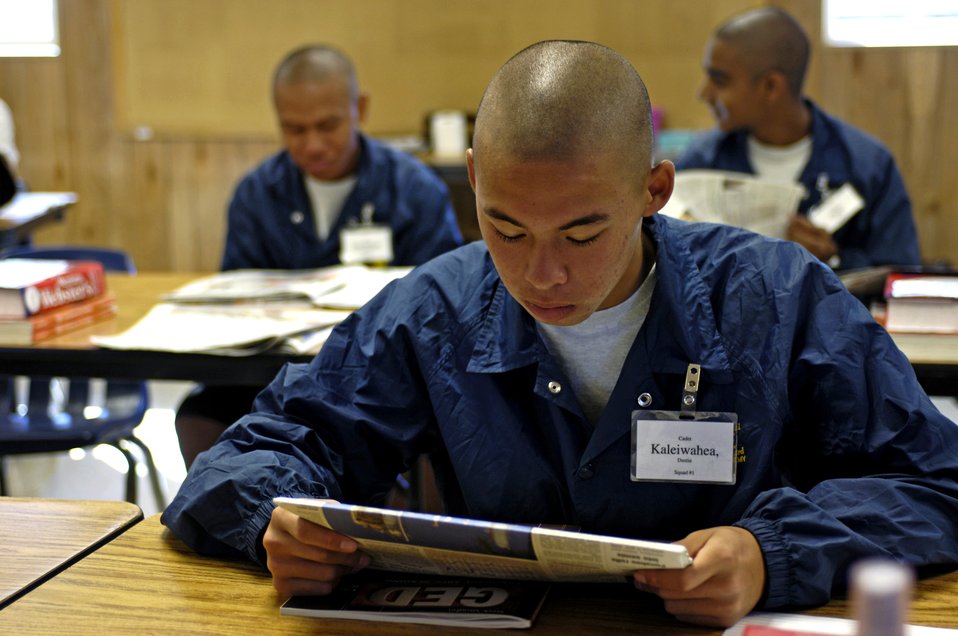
National Guard program helps at-risk teens

Cadet Dustin Kaleiwahea reads about current events at the Hawaii National Guard Youth Challenge Academy in Kapolei, Hawaii on Thursday, May 18, 2006. The academy staff teach life skills to non-traditional students so they can be successful in the community and earn a high school diploma.